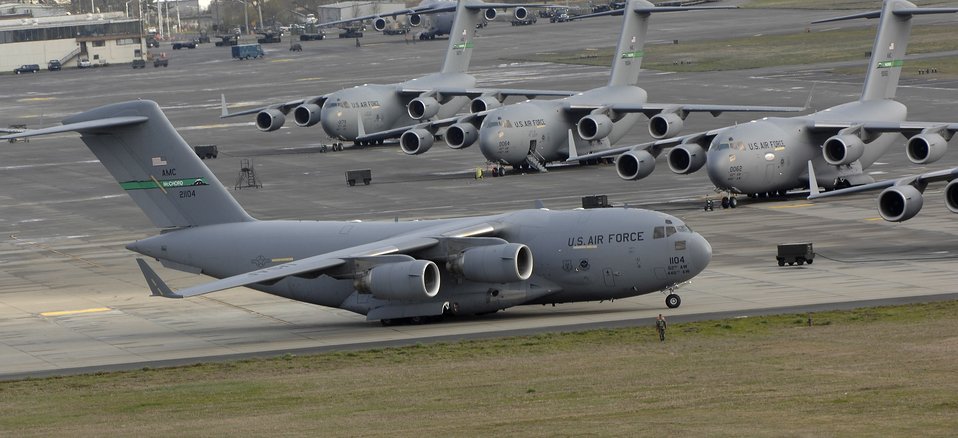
Globetrotting Globemaster

A C-17 Globemaster III prepares to launch on a local sortie as other C-17s are readied March 28 at McChord Air Force Base, Wash.